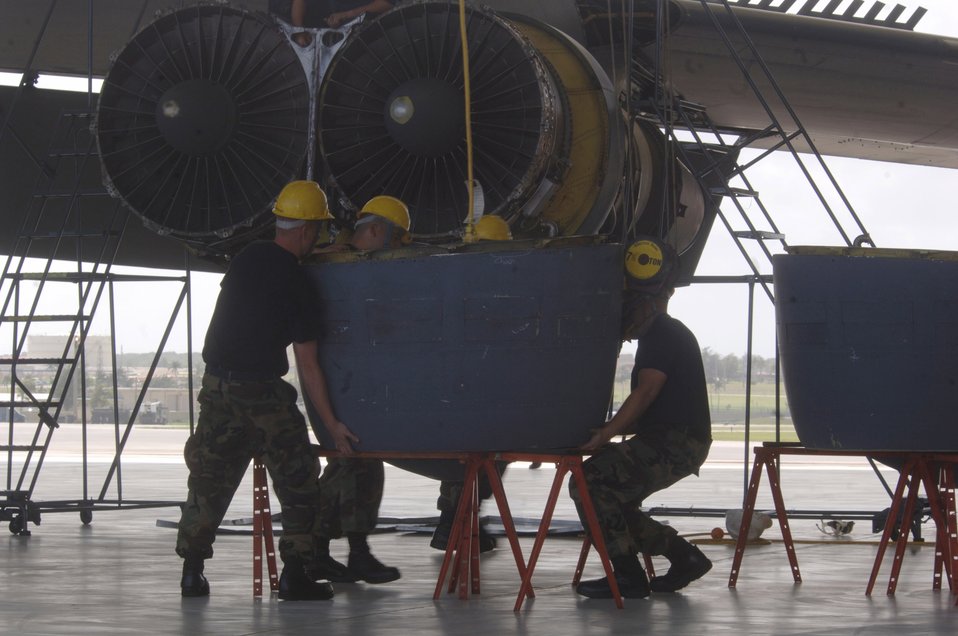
Maintaining the fortress

ANDERSEN AIR FORCE BASE, Guam (AFPN) -- Mechanics remove the engine ring cowl of their B-52 Stratofortress aircraft during phase maintenance at Hangar 1 here at Andersen AFB, Guam. The Airmen are deployed from the 2nd Maintenance Squadron based at Barksdale Air Force Base, La. The B-52s come here from a forward-deployed location and go into phase maintenance after 300 flying hours. The $34-million hangar is the newest in the Air Force and can house any type of Air Force aircraft.